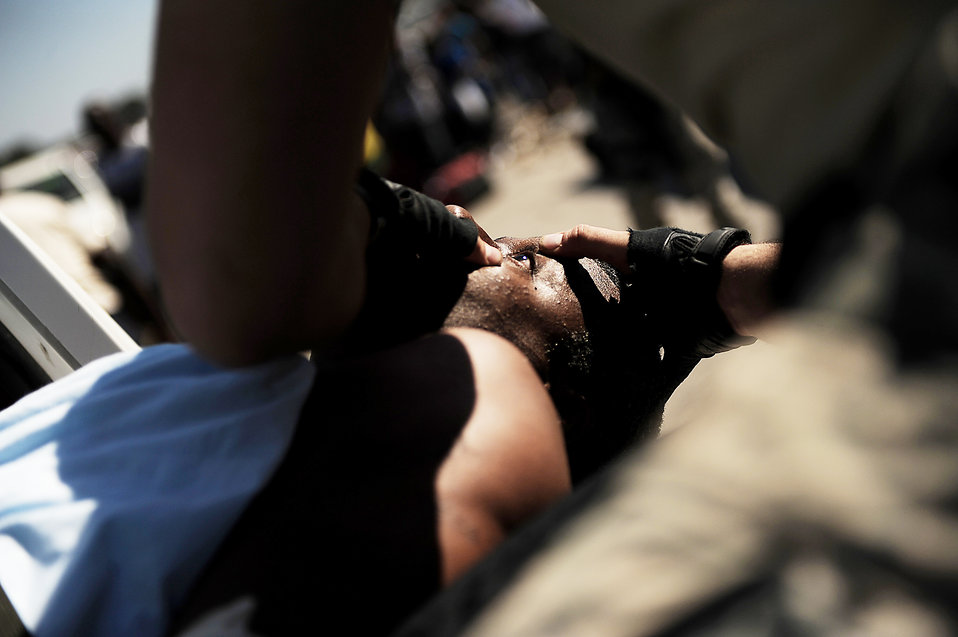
Hurlburt Field medics continue to save lives in Haiti

Master Sgt. Douglas Brook and Tech. Sgt. Nicholas Wentworth perform urgent medical care on a Haitian man at the Toussaint L'Ouverture International Airport Jan. 18, 2010, in Port-au-Prince, Haiti. The man was injured in the Jan. 12 7.0-magnitude earthquake. Sergeants Brook and Wentworth are both assigned to the 1st Special Operations Support Squadron.